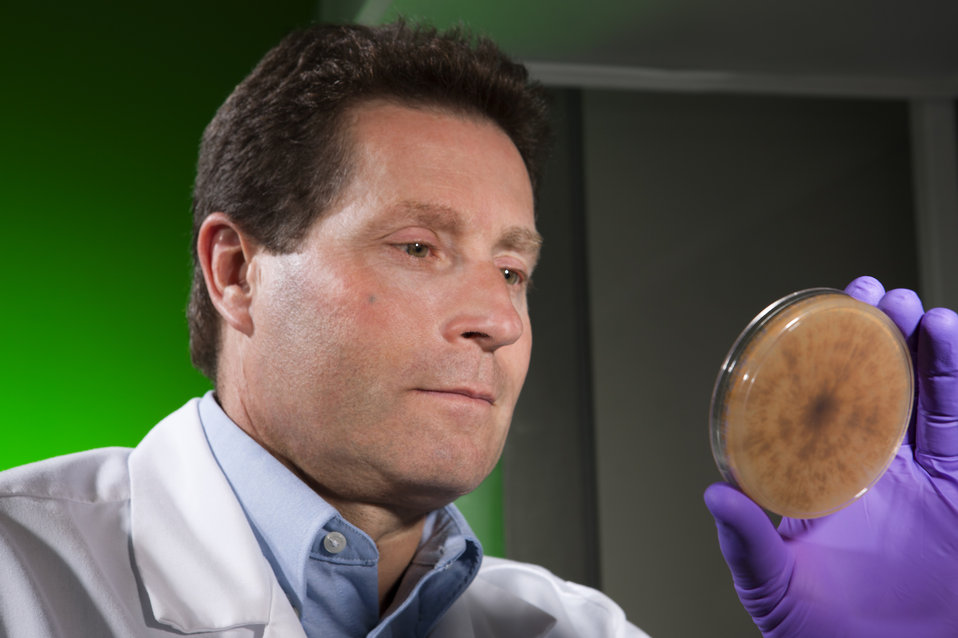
U.S. Department of Agriculture (USDA) Agriculture Research Service (ARS) plant pathologist Carl Strausbaugh evaluates a fungal culture of Rhizoctonia solani on Sept. 8, 2002.